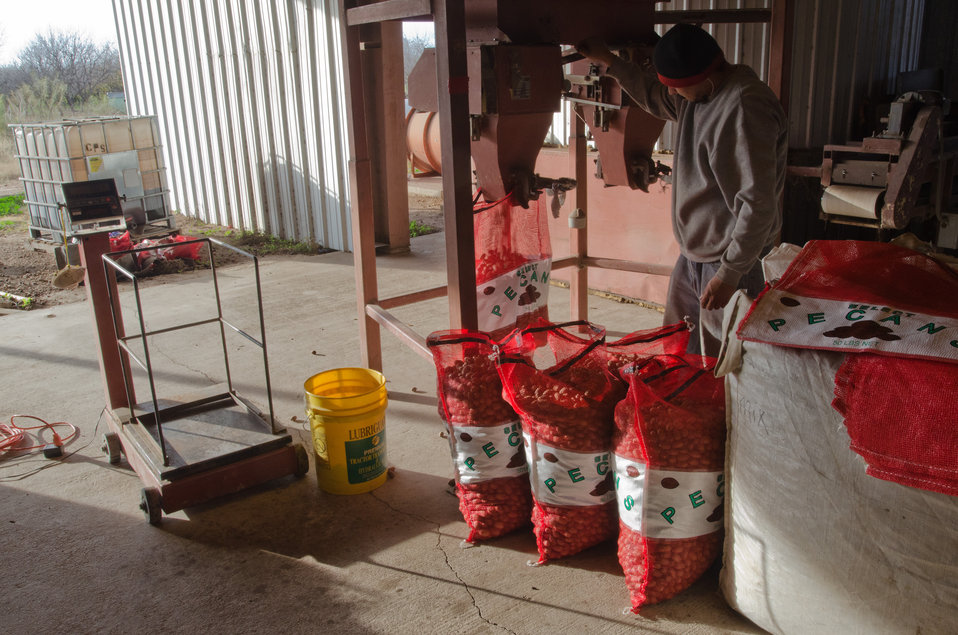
Pedro Rodriguez operates the pecan bagging station at Arrowhead Farms processing facility at Crystal City, TX, on Friday, December 9, 2011. The farm has been owned by Mr. Akram Mohammad, a pecan farmer since 2005. The 719 acre farm with 10,000 trees, features some orchards with underground micro irrigation system that feeds water to the roots of 4,380 pecan trees on 146 acres. Mr. Mohammad said, “USDA (U.S. Department of Agriculture) was essential to my business and trees surviving the recent exceptional drought. The trees were stress free thanks to underground micro-irrigation. This is essential to the future growth of Texas agriculture and good for America.” U.S. Department of Agriculture’s (USDA) Environmental Quality Initiative Program (EQIP) awarded Mr. Mohammad a $130,000 grant in 2008. He provided $26,000 for the balance of the $156,000 total cost to install a 146-acre underground micro-irrigation for 4,380 trees.